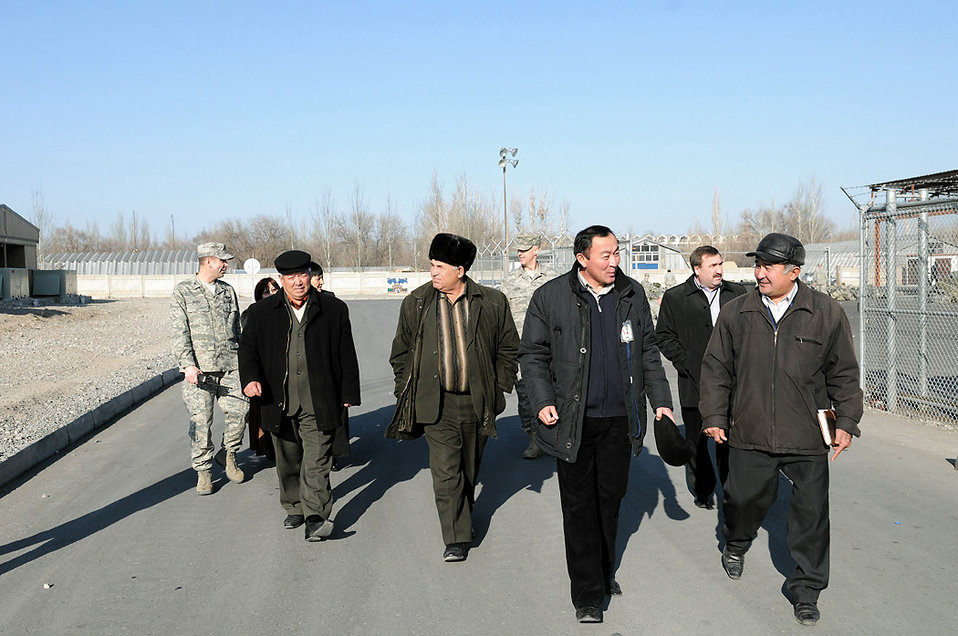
Afghan mayors visit Manas

Col. Christopher Bence talks with Kyrgyz village mayors and their deputies as he leads them on a Dec. 10 tour of Manas Air Base, Kyrgyzstan. Leaders from six villages around Manas AB visited the base and had lunch with wing leaders. The visit strengthened friendships and issues affecting the local villages that the base can assist with were discussed. Colonel Bence is the 376th Air Expeditionary Wing commander.